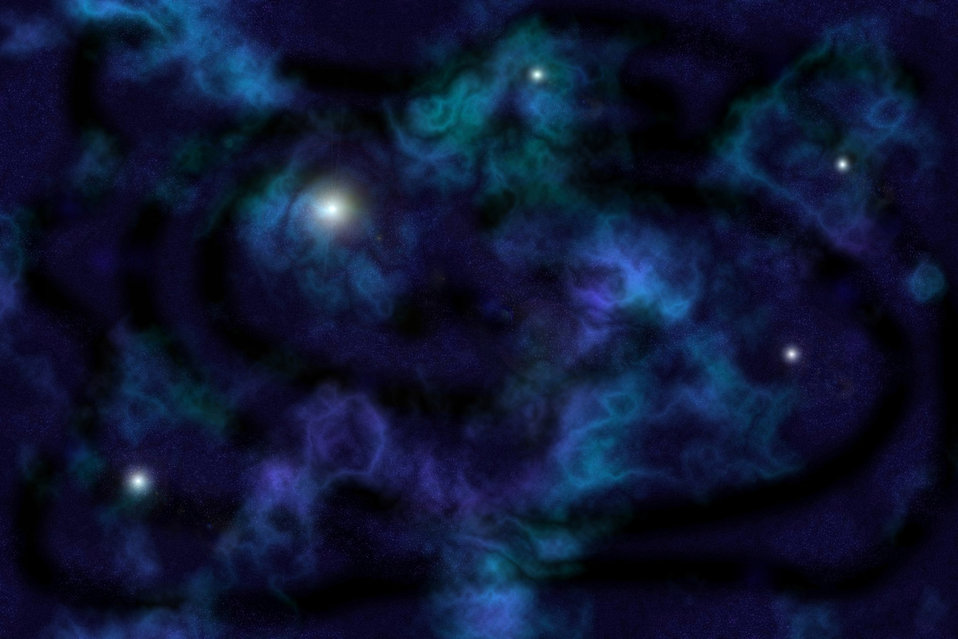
Starfield in blue.